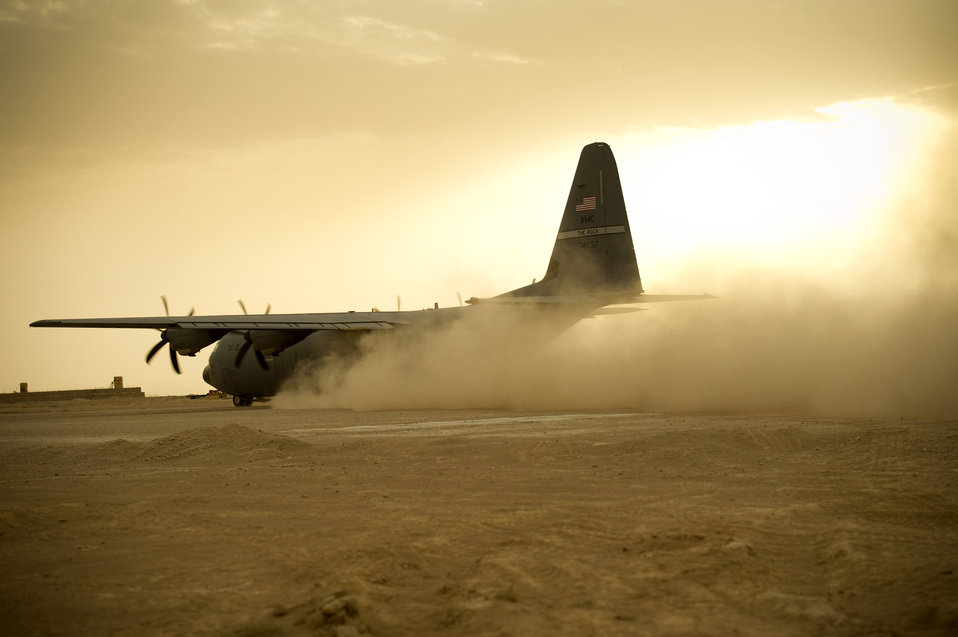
Kicking up dust

A C-130 Hercules takes off on a dirt landing strip in Qalat, Afghanistan, August 14, 2011. The C-130 transported Army passengers and cargo.